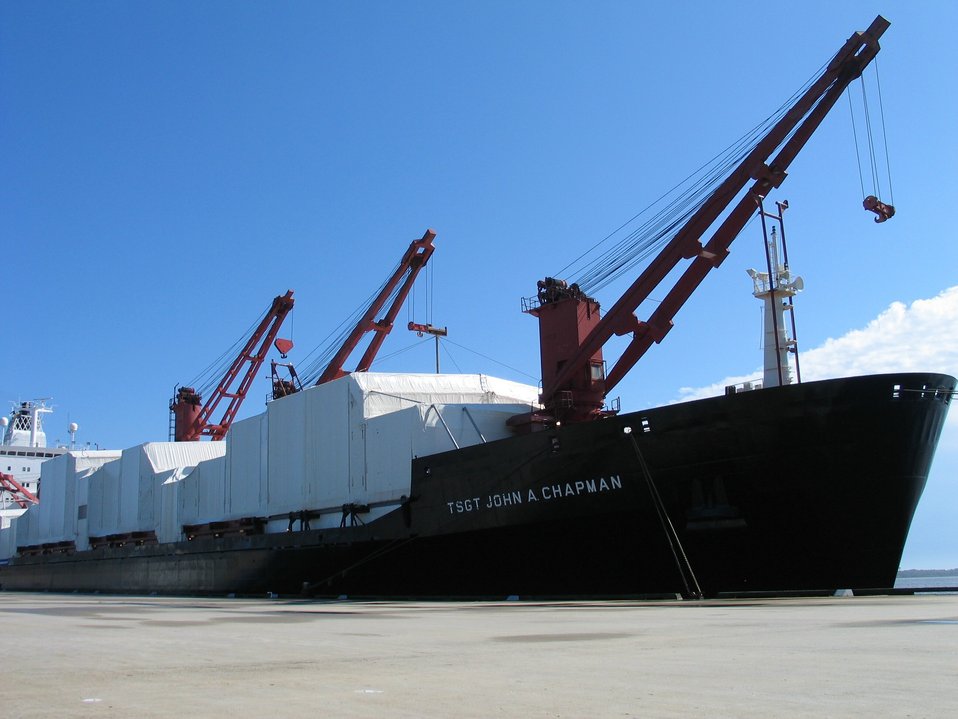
Ship takes heroic legacy to the fight

SUNNY POINT, N.C. -- Military Sealift command officials charter this ship for prepositioning ammunition and supplies for possible Air Force operations. The ship is 670-feet long and can move at speeds of as fast as 16 knots.